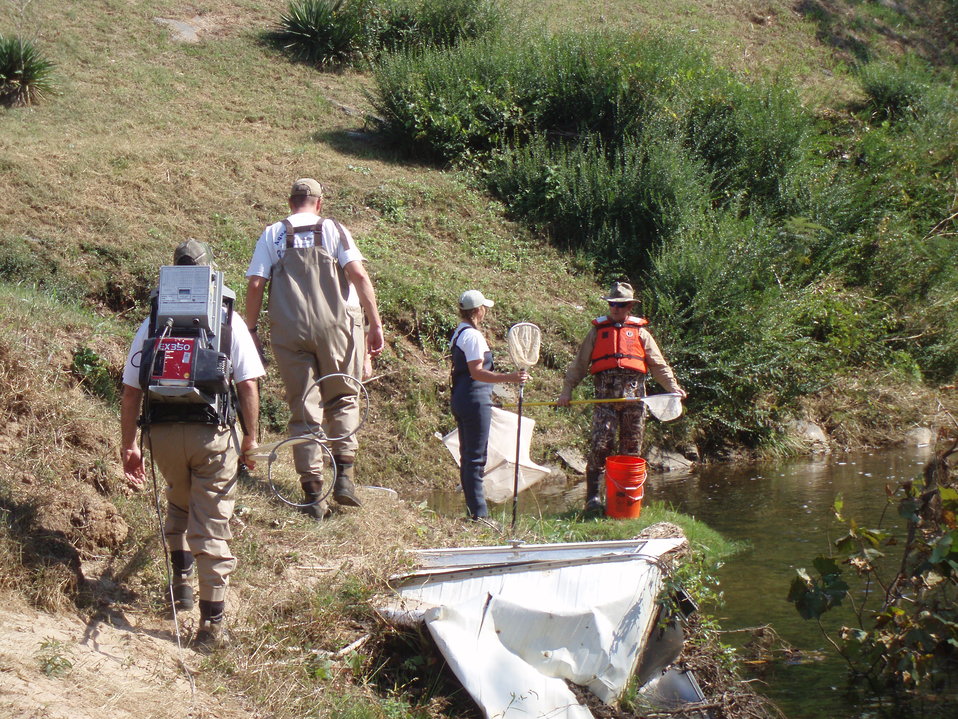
Electrofishing survey on the Pigg River

Biologists prepare to electrofish a section of the Pigg River in Virginia to survey for Roanoke logperch.